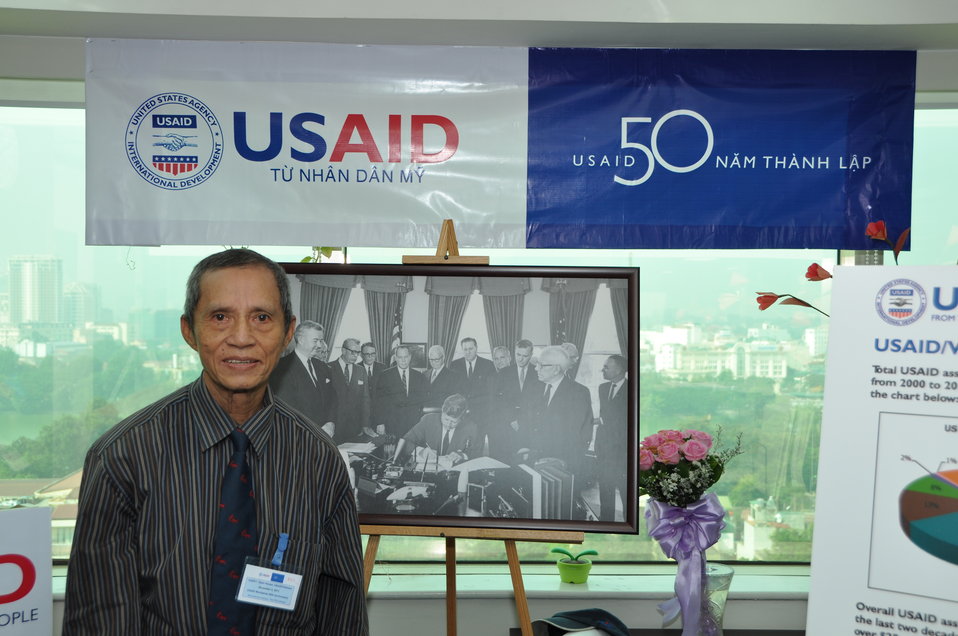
USAID Vietnam Open House 50th Anniversary, Hanoi